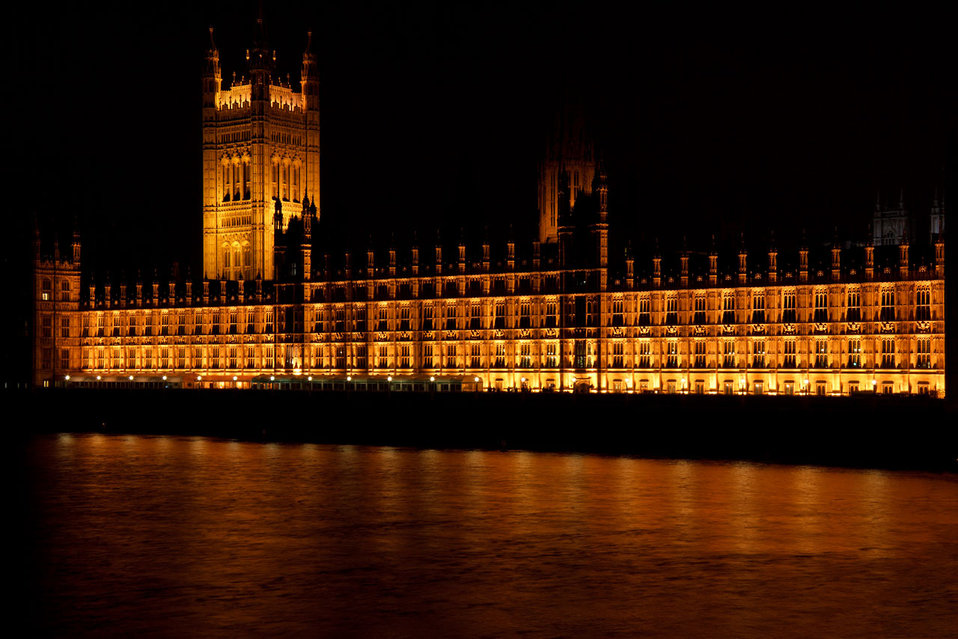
Houses of parliament at night in london.